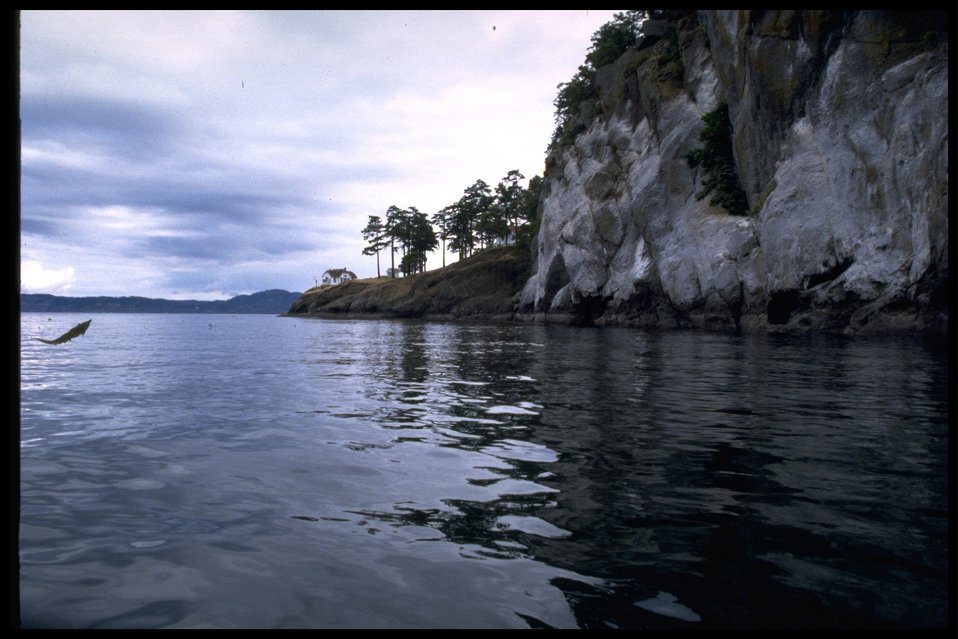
Turn Point from water with light station and buildings. Series of 17 photos.